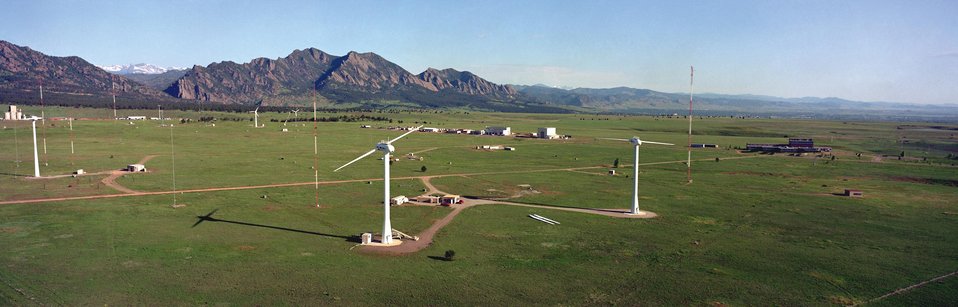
Turbines at the National Wind Technology Center (NWTC) with the Flatirons in the background.
NWTC, the nation's premier facility for wind turbine R&D is a center for research and a magnet for new industry. The site, at the foot of the Rockies, is ideal due to its variable winds and reliable winter storms. NREL scientists work with wind turbine developers to make advanced wind systems. Wind plant operators and part developers get the best technical help, research and testing in the world.